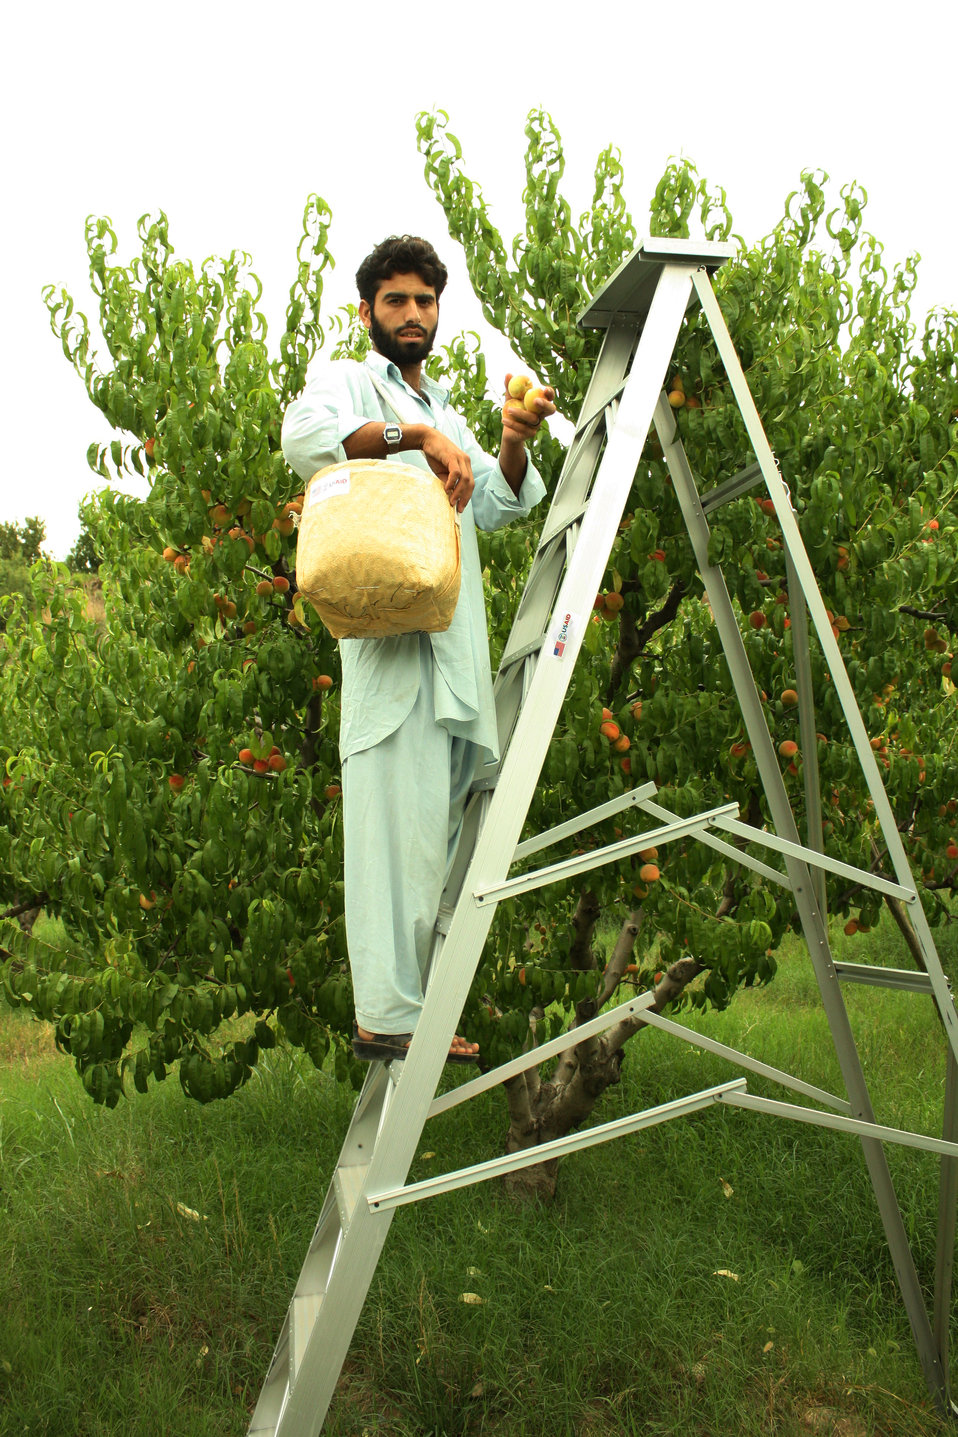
3. USAID Firms Project encourages adoption of best management practices and peach farming techniques through the use of model agricultural implements that results in more production